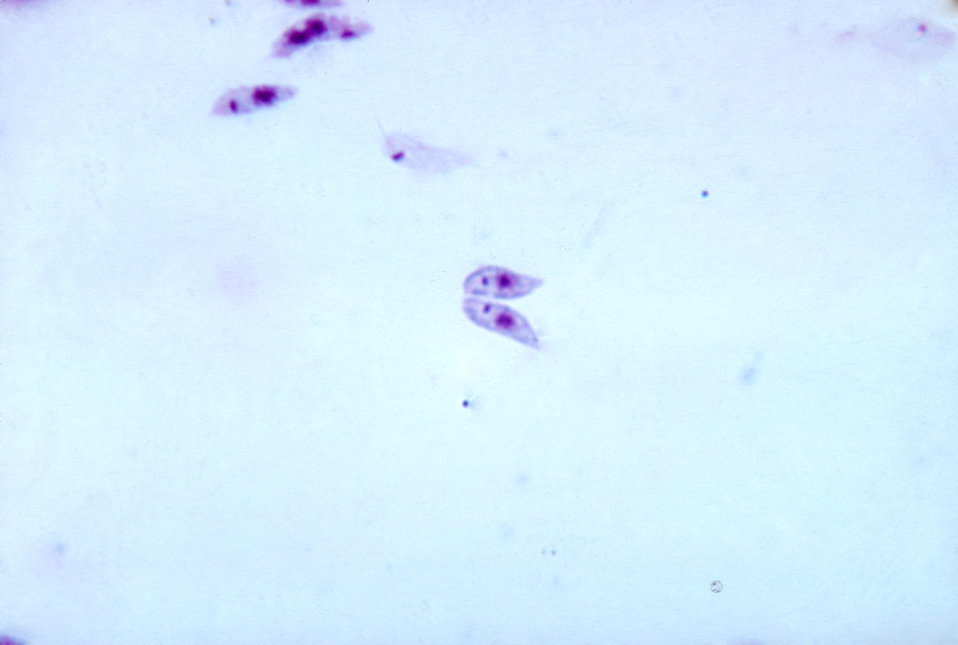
Leishmania donovani, leptomonad forms. Parasite.